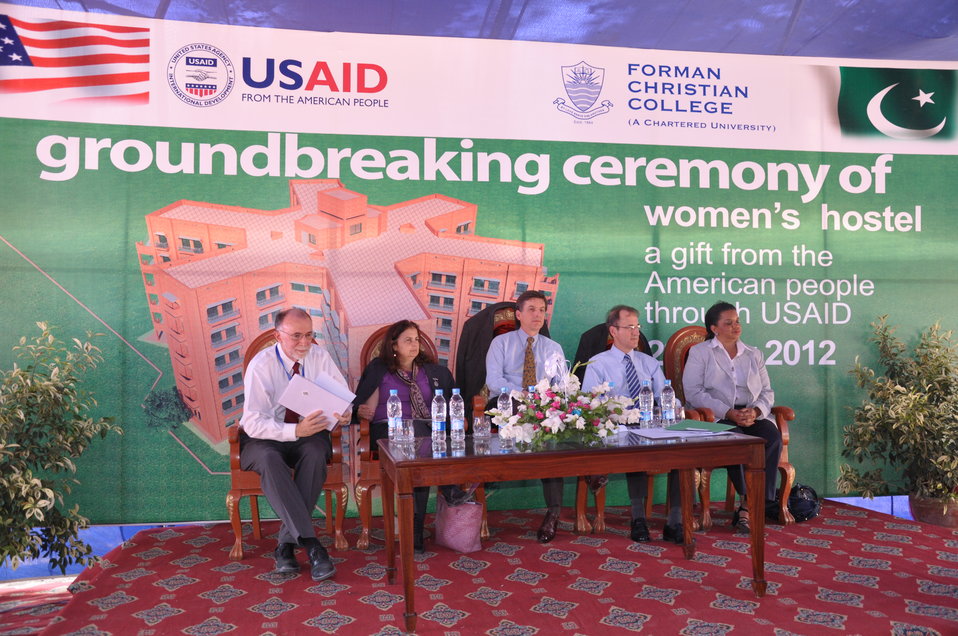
Groundbreaking ceremony for the USAID-funded women's hostel at Forman Christian College

Lahore May 29, 2012: U.S. Agency for International Development (USAID) Mission Director
Dr. Andrew Sisson and U.S. Consul General Nina Fite led the groundbreaking ceremony at the
new USAID-funded Women’s Hostel at Forman Christian College (FCC).